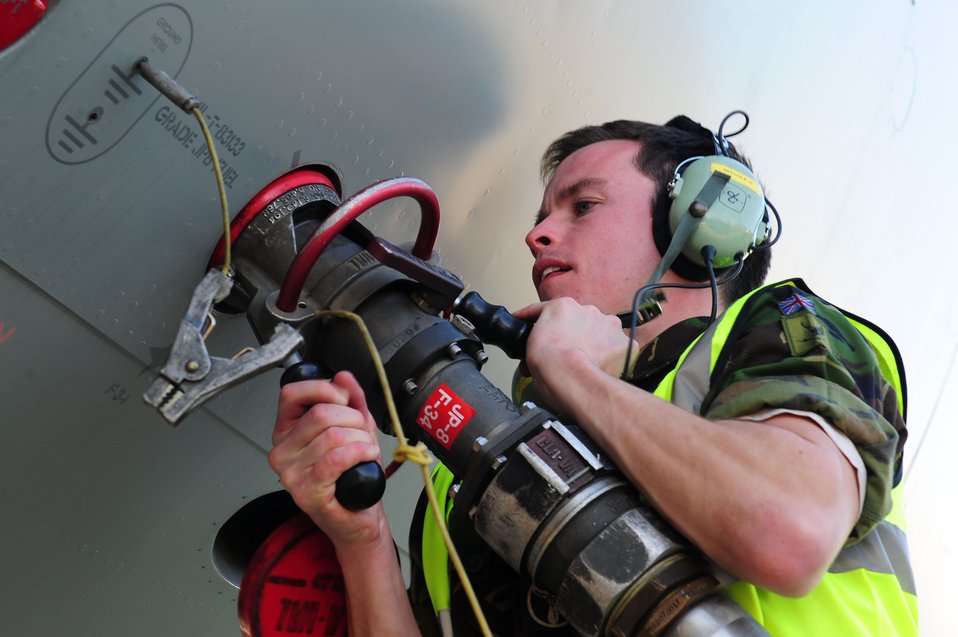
Langley tests new fuel delivery system

Royal Air Force Senior Craftsman Mark Butler, an avionics technician, attaches Hydrant Mobile Refueling equipment to an E-3 Sentry aircraft at Langley Air Force Base, Va., March 7, 2012. Personnel at Langley AFB are testing the new fuel delivery system, which officials say could revolutionize flightline operations and save the Air Force millions of dollars.